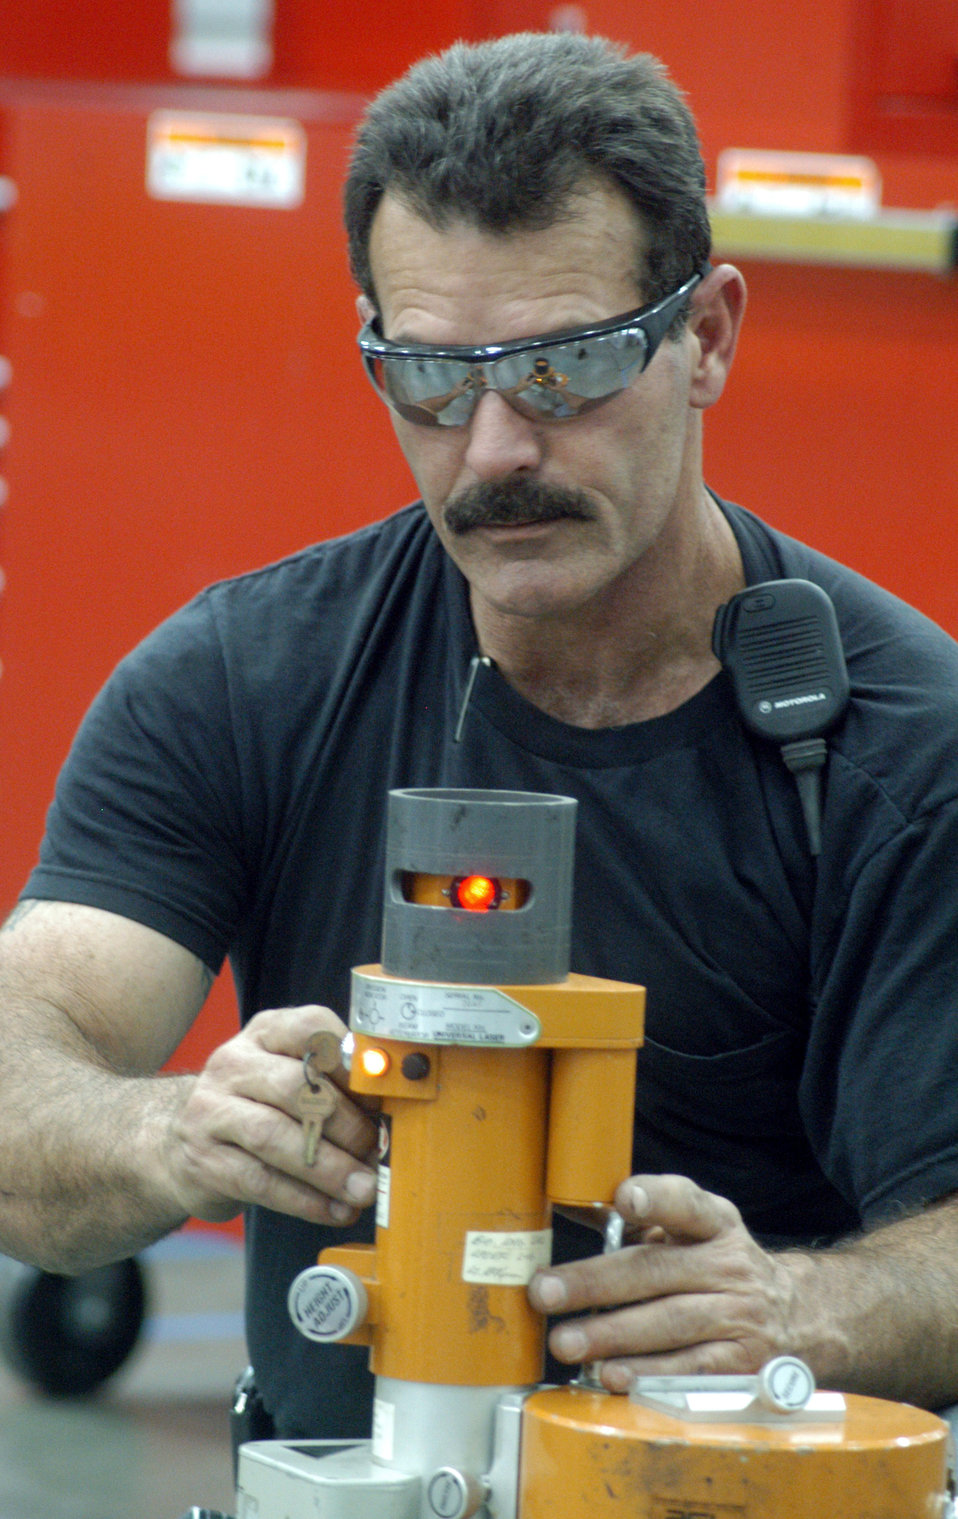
ROBINS AIR FORCE BASE, Ga. -- Robert Hollar calibrates a laser leveler used to assure everything is in perfect alignment. Mr. Hollar is a millwright, or metal structure mechanic, here.